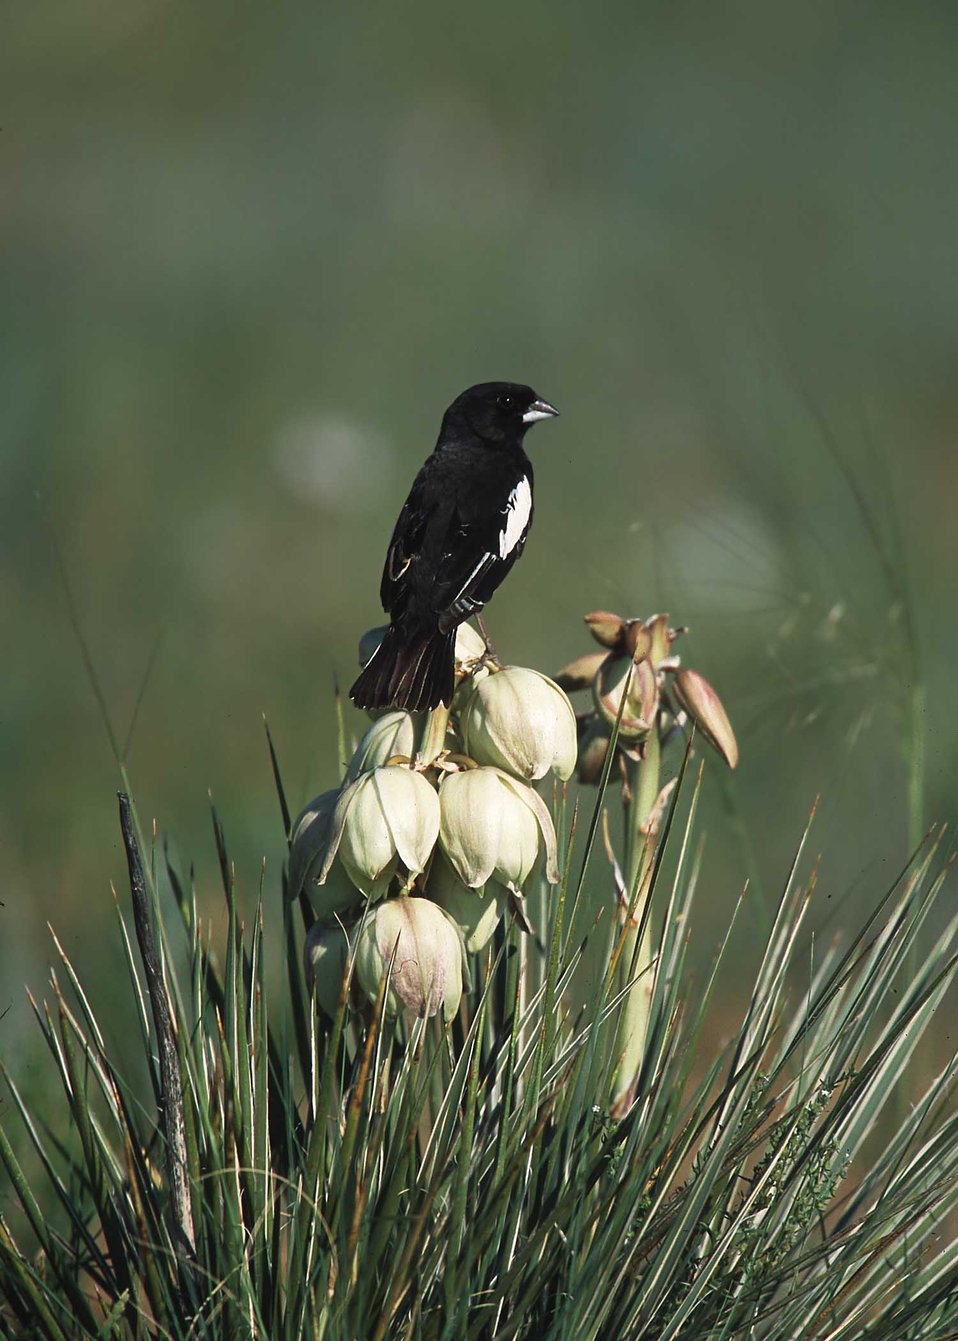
Lark Bunting on Spanish Bayonette (Cholla).